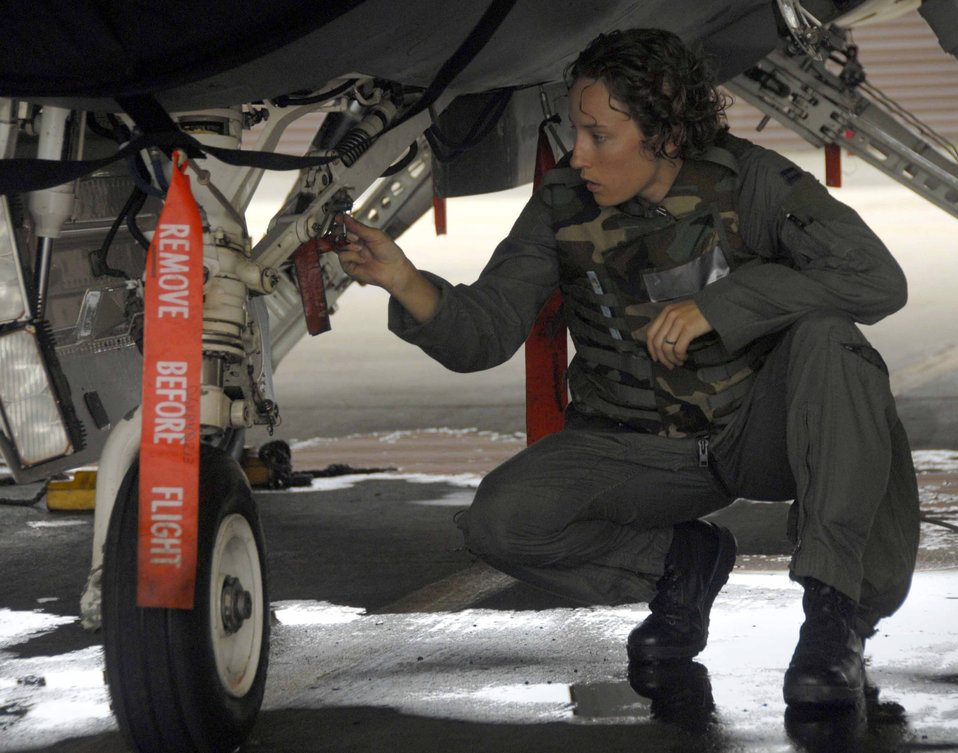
Osan exercise tests Airmen

Capt. Kristin Hubbard checks the landing gear on her F-16 Fighting Falcon during a base-wide exercise July 21 at Osan Air Base, South Korea. Captain Hubbard is a 36th Fighter Squadron pilot. The operational readiness exercise tests Osan AB Airmen's ability to execute combat operations, receive follow-on forces and defend the base from attack.